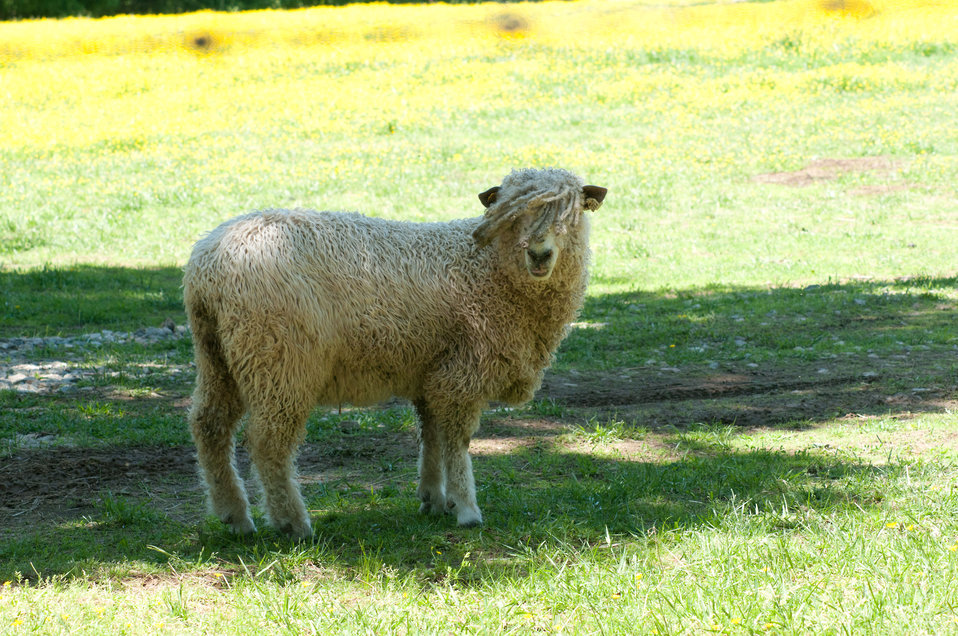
Hybrid sheep can survive solely on grass at the Tuckahoe Plantation, in Goochland County, VA on Thursday, May 5, 2011. Where they graze on the grass and leave nutrient rich manure to revitalize the soil, enhancing regrowth. The plantation was the boyhood home of President Thomas Jefferson from 1745 until 1752, today it is a working farm with cattle, sheep, chickens and rabbits supplying meats to Fall Line Farms a local food hub. Fall Line Farms offers a wide variety of household food staples and specialty items on an ever changing inventory of fruits, vegetables, meats, soaps, eggs, cheeses, flowers, honey, pastas, sauces, syrups, baked goods, mushrooms, flour and grains. Suppliers post what they have on a Lulus Local Food online listing and customers make their selection. Every Thursday, suppliers team up to deliver customized orders to, one of several pick-up points, designated by the customer in or around the Richmond, VA area.